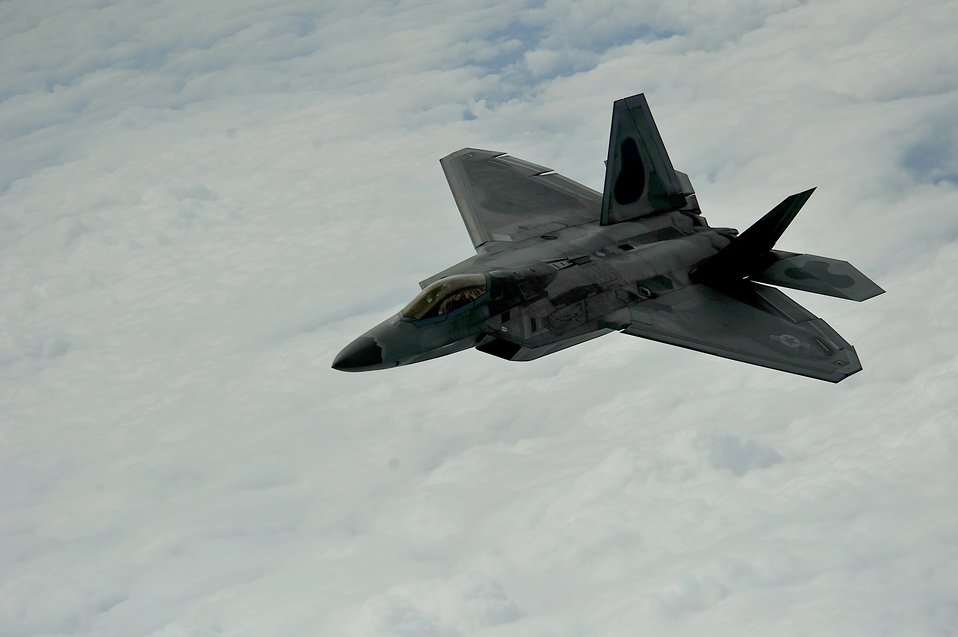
F-22 Raptor

A 1st Fighter Wing's F-22 Raptor from Joint Base Langley-Eustis, Va. pulls away from a KC-135 Stratotanker with the 756th Air Refueling Squadron, Joint Base Andrews Naval Air Facility, Md. after refueling off the east coast on May 10, 2012. The first Raptor assigned to the Wing arrived Jan. 7, 2005. This aircraft was allocated as a trainer, and was docked in a hanger for maintenance personnel to familiarize themselves with its complex systems. The second Raptor, designated for flying operations, arrived Jan. 18, 2005. On Dec. 15, 2005, Air Combat Command commander, along with the 1 FW commander, announced the 27th Fighter Squadron as fully operational capable to fly, fight and win with the F-22. (U.S. Air Force Photo by: Master Sgt. Jeremy Lock)